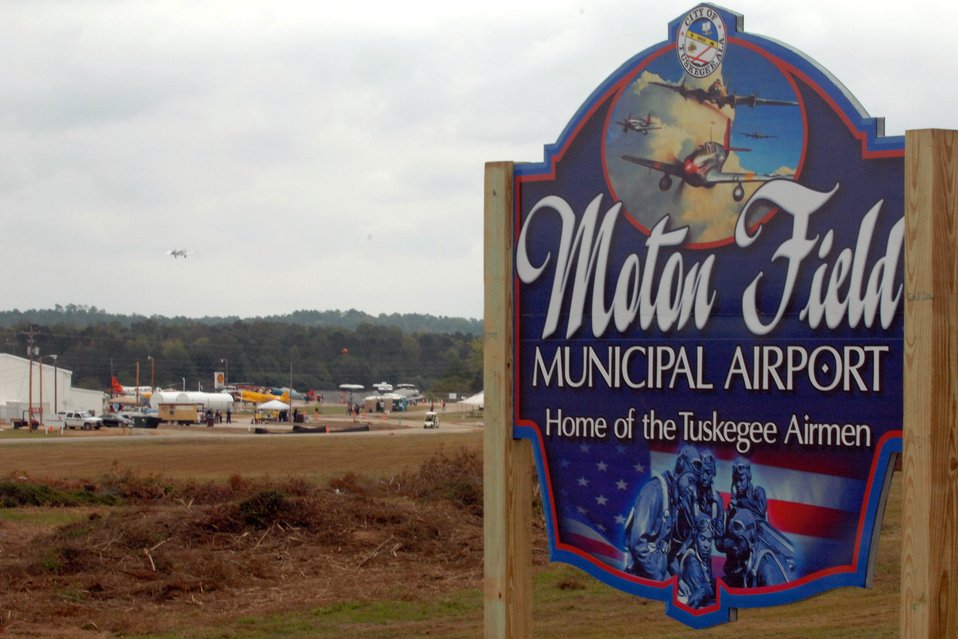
Remembering the Tuskegee Airmen

The Tuskegee Airmen National Historic Site was opened Oct. 11 at Moton Field in Tuskegee, Ala. The site is dedicated to the Tuskegee Airmen no longer with us. A memorial for two of the Airmen who passed away recently was recognized and their ashes were sprinkled on the airfield. Moton Field in the 1940s was the only primary flight training facility for the first African American pilot candidates in the Army Air Corps, these pilots are known as the Tuskegee Airmen.